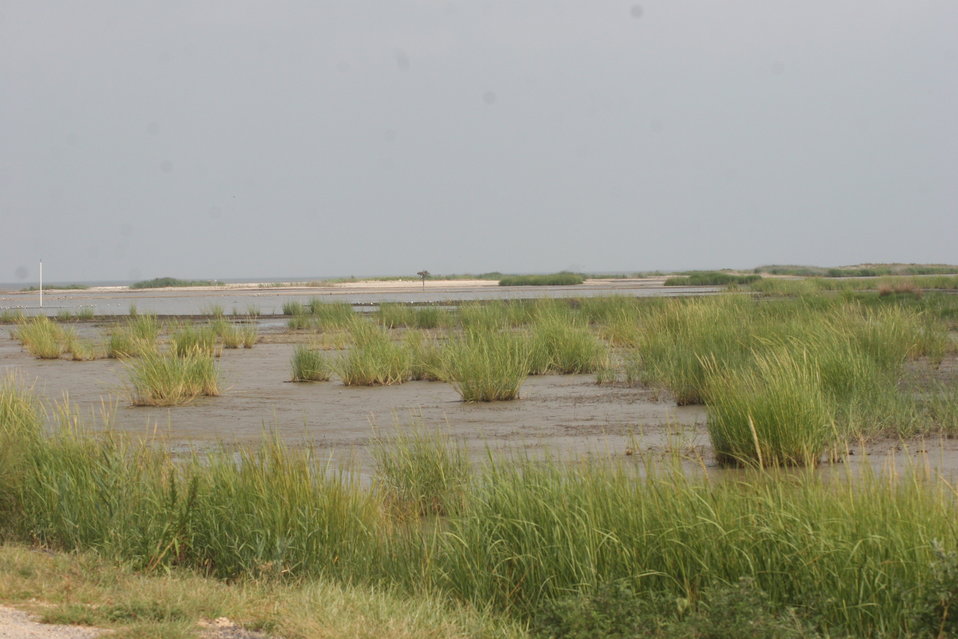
Prime Hook NWR